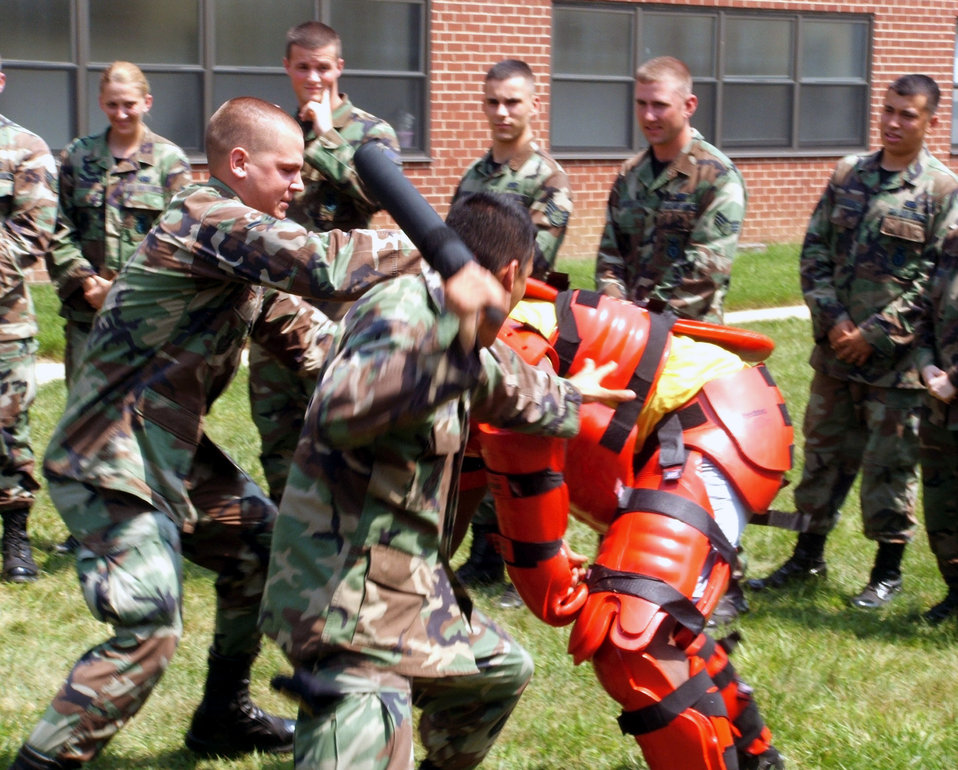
Phoenix Raven

Airman 1st Class Guillermo Ortiz and Airman Coleman Powell participate in a training scenario with an aggressor in a